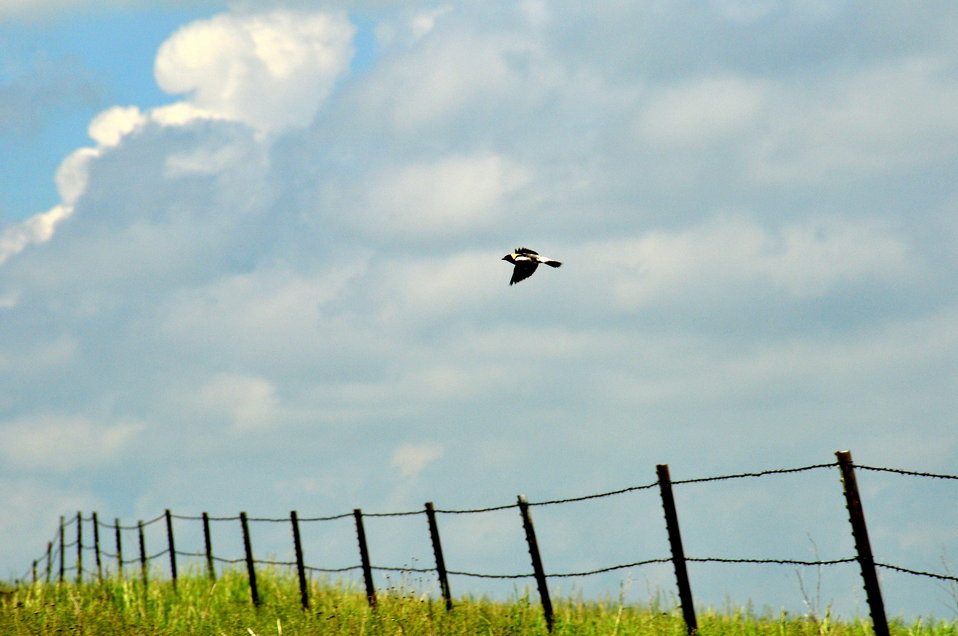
Male bobolink Sand Lake Wetland Management District 01

A male bobolink sings it melodius song on its breeding territory in Sand Lake Wetland Management District. The Audubon website birds.audubon.org/birds/bobolink describes it as 'a series of joyous, bubbling, tumbling, gurgling phrases with each note on a different pitch.'